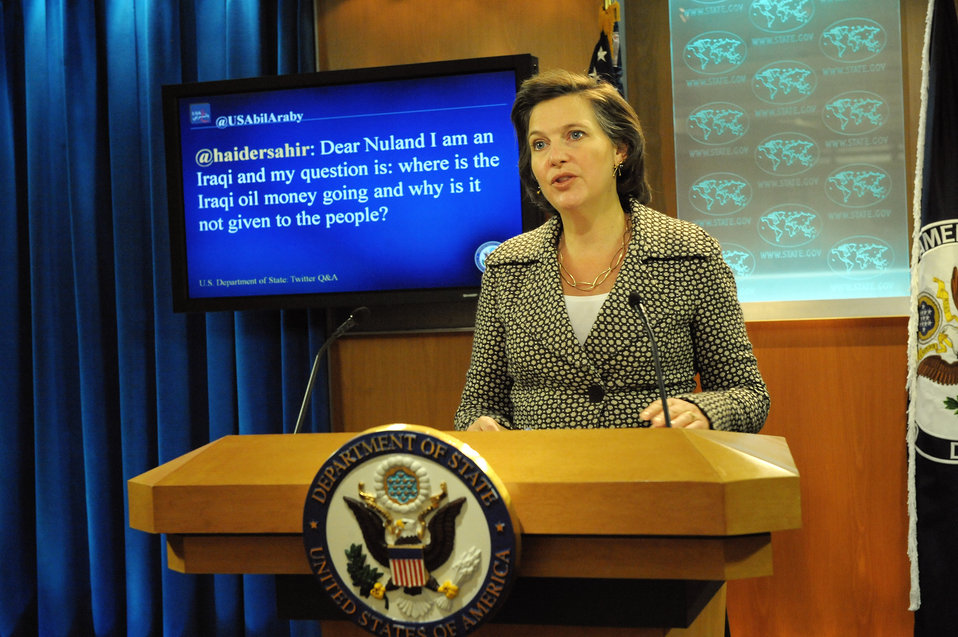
Spokesperson Nuland Responds to a Question from @USAbilAraby

Victoria Nuland, Spokesperson for the U.S. Department of State, answers a question selected from the Department’s official Arabic Twitter feed, @USAbilAraby, on January 20, 2012.